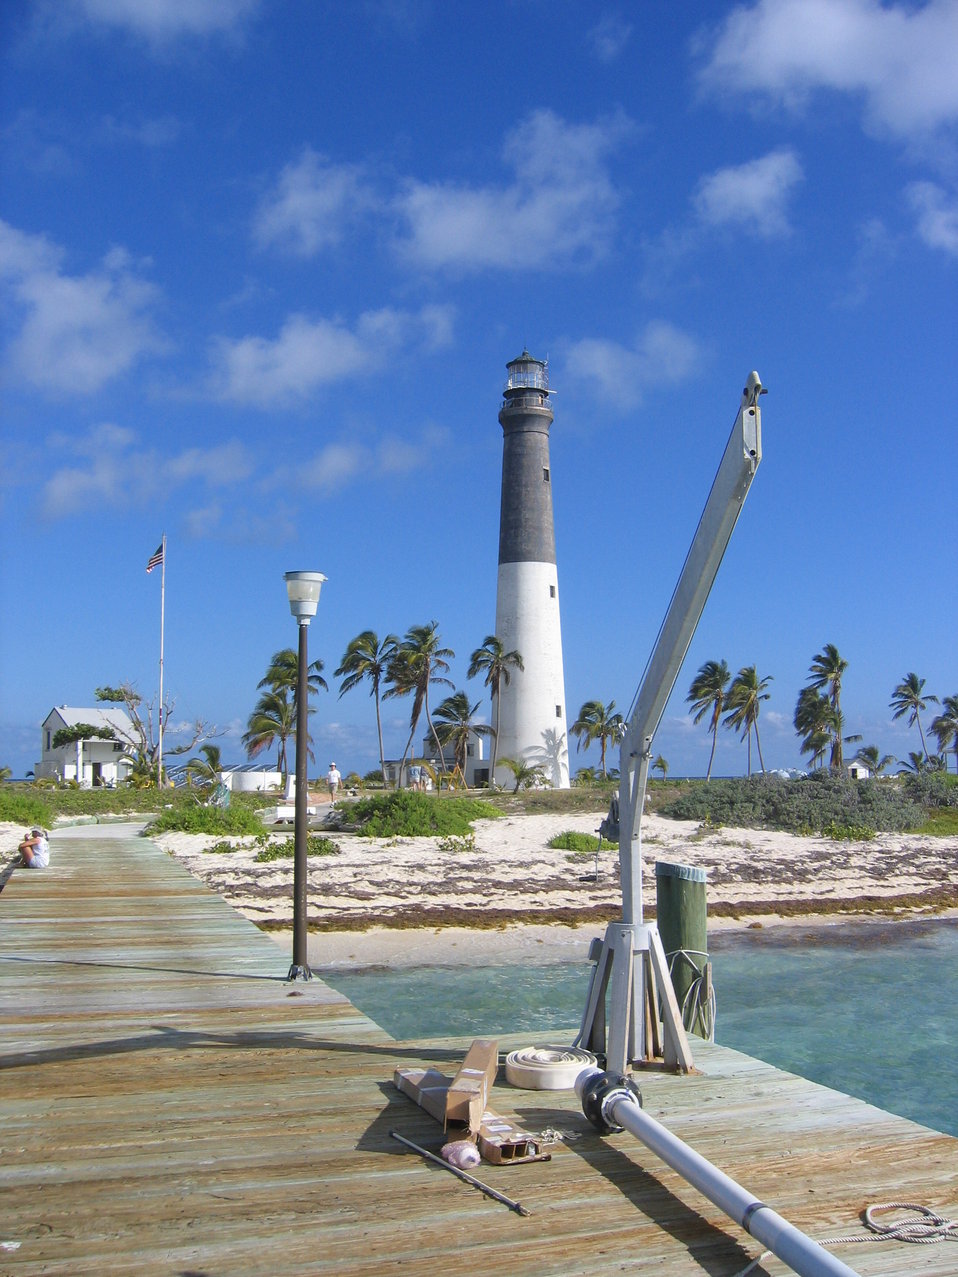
Loggerhead Key Lighthouse